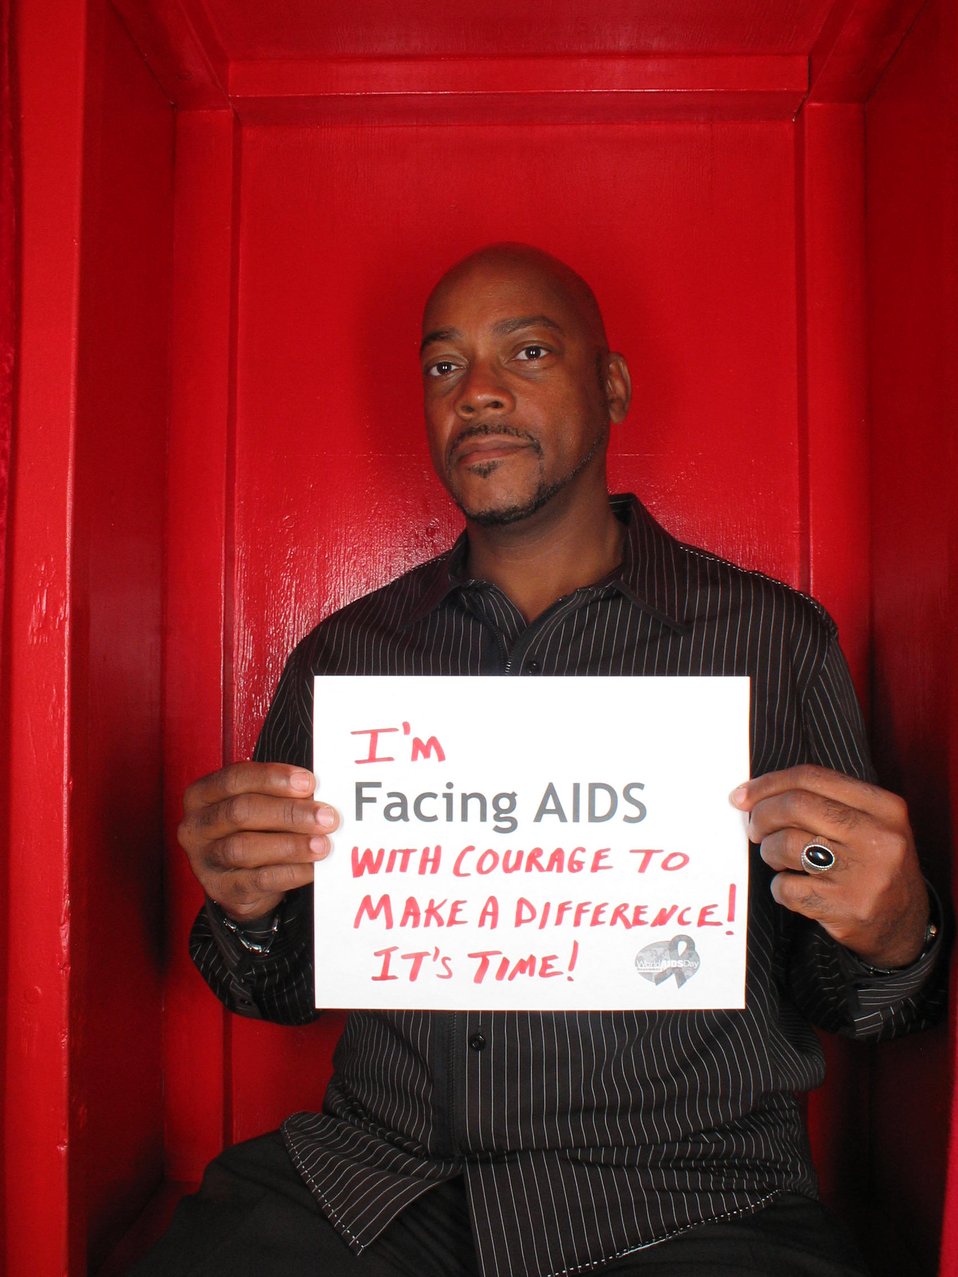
I'm Facing AIDS with courage to make a difference! It's time.